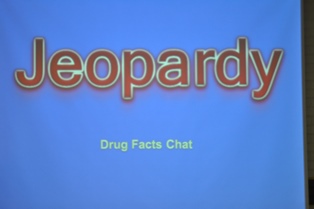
NDFW Jeopardy Events

In honor of the 2014 National Drug Facts Week, Casa Grande Alliance went to St. Anthony of Padua School in Casa Grande, AZ and played Drug Facts Chat Jeopardy! The students learned that M.O.S.T. (Our Social Norm Campaign that stands for Making Our Students Think) Casa Grande youth don't use drugs or drink alcohol! The students were also able to get their drug and alcohol questions answered and boy did they have some good ones to ask!